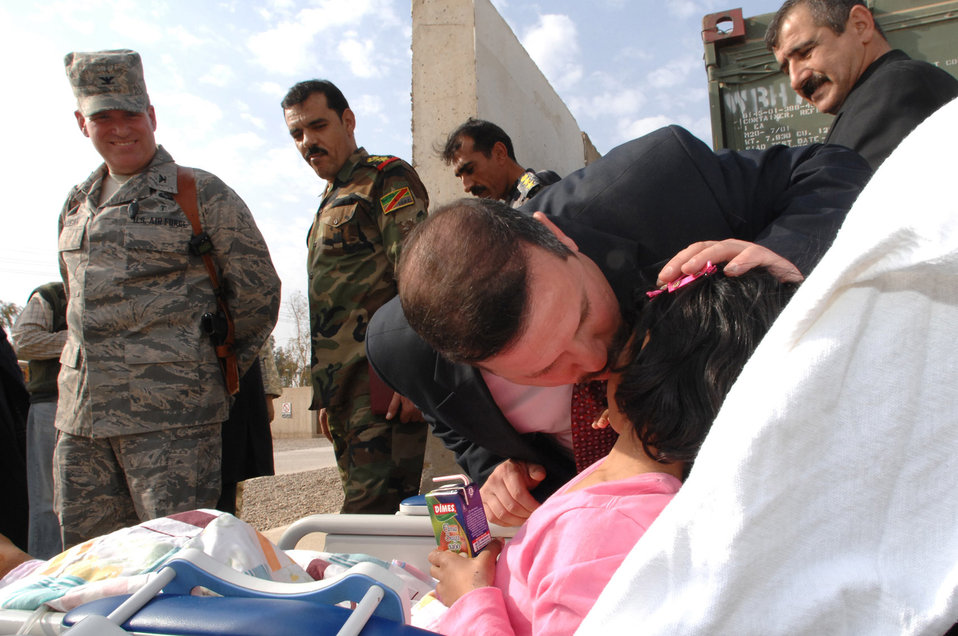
Iraqi leaders visit civilian IED victims at Air Force hospital

Balad Mayor Amer Mrhown Al-Obedy kisses the cheek of a young Iraqi girl Feb. 11 at Balad Air Base, Iraq. The girl was injured in a car bombing the day before and was brought to the Air Force Theater Hospital for treatment. The mayor and other local area leaders came to the hospital to visit with 16 Iraqi patients who were admitted there after a vehicle-borne improvised explosive device was detonated Feb. 10. The hospital serves as the region's premiere hub for medical care. The staff treats both coalition Force members and Iraqi civilians who would likely not survive without the technologically-advanced care available at the hospital.